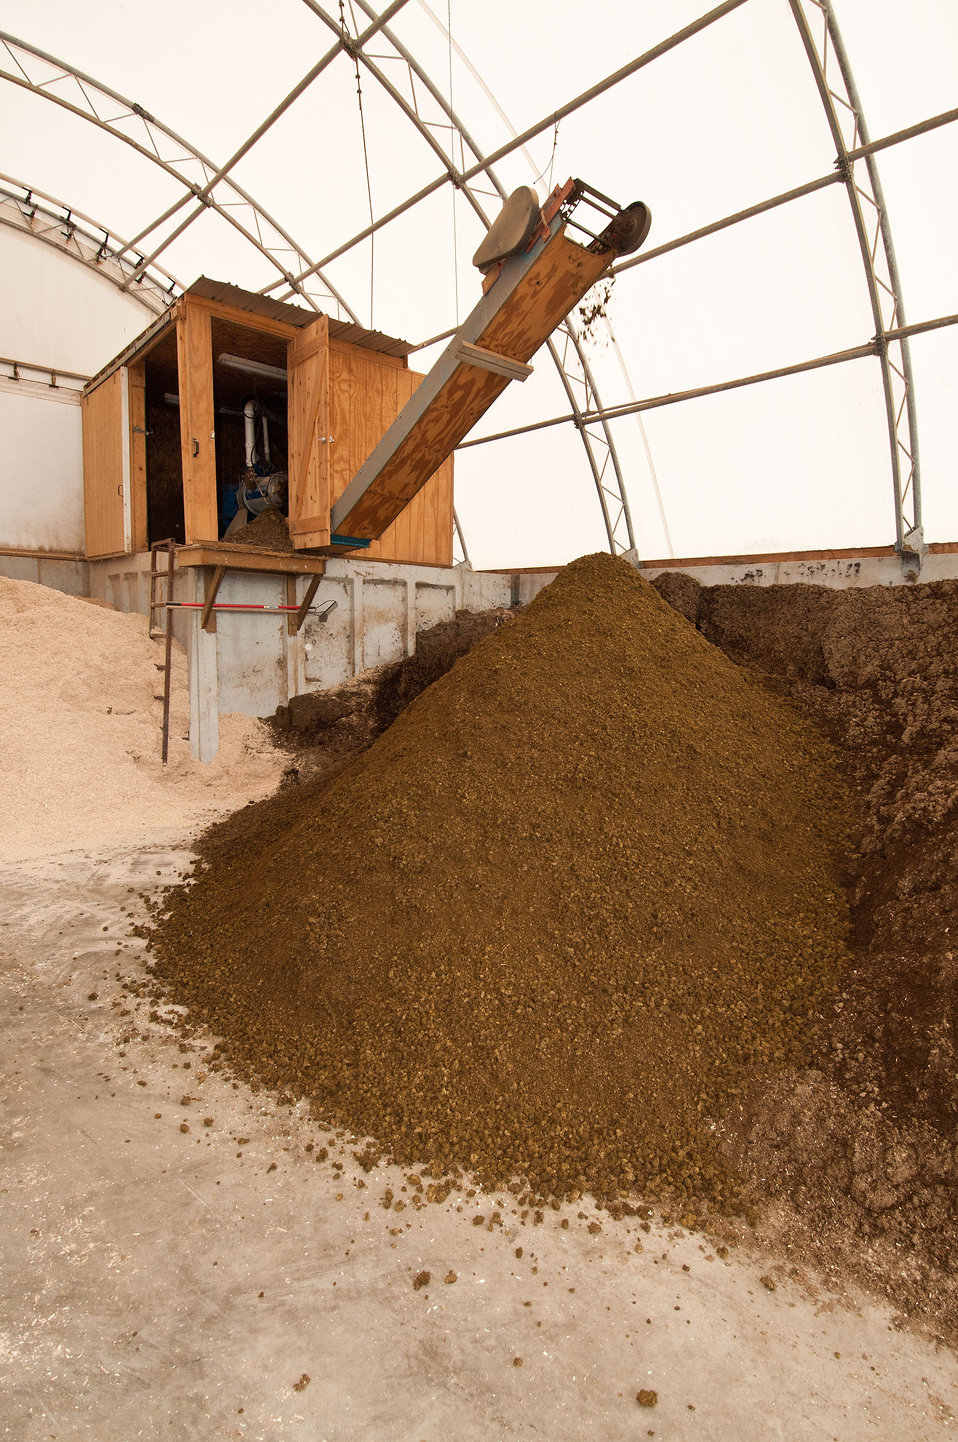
Compost solids produced by the anaerobic digester at Pennwood Dairy Farms in Berlin PA. An anaerobic digester is a component of a waste management system that captures biogas for energy production a byproduct of this system are compost solids that are used for bedding for the dairy’s cattle. The anaerobic digester practice is part of a planned conservation management system that manages manure and/or comprehensive nutrient management system. Agriculture Secretary Tom Vilsack visited the dairy on Tuesday, July 17, 2012 to announce the U.S. Department of Agriculture’s (USDA) energy efficiency programs and announced a new effort to help rural consumers make affordable, energy-efficient improvements to their homes and businesses.